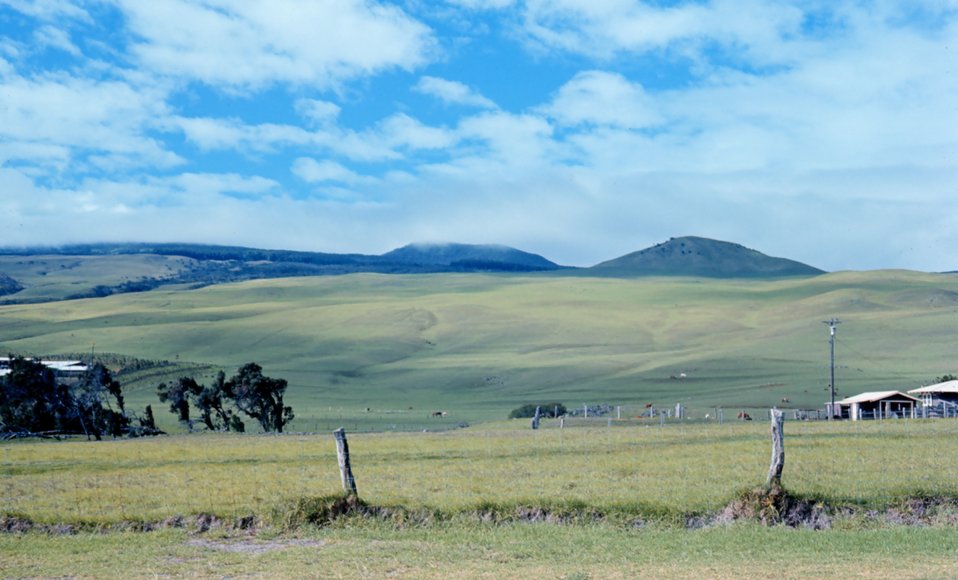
A scene in the Parker Ranch